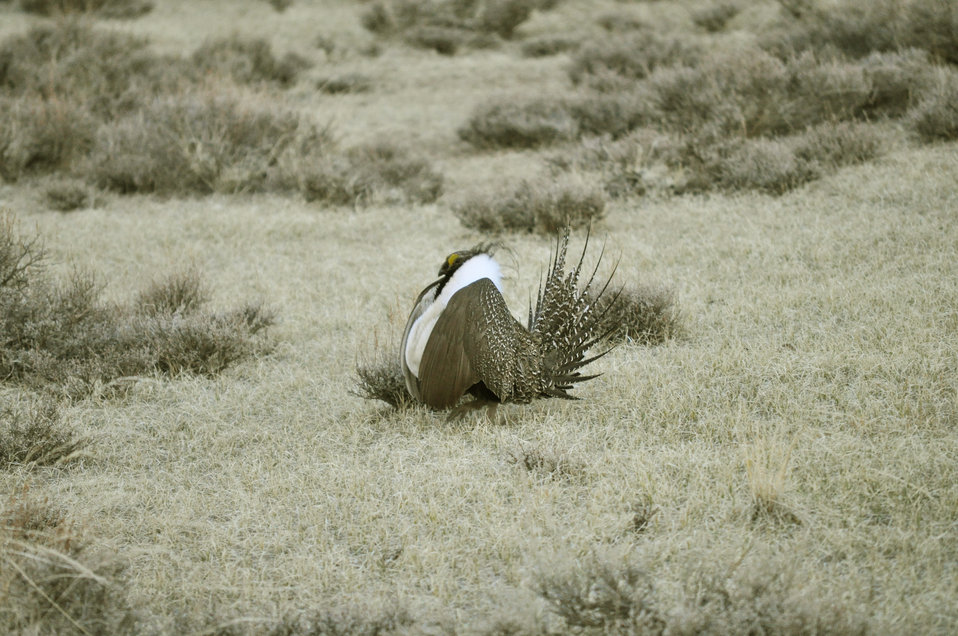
Male greater sage-grouse struts at lek (dancing or mating grounds) to attract females near Bodie, California.